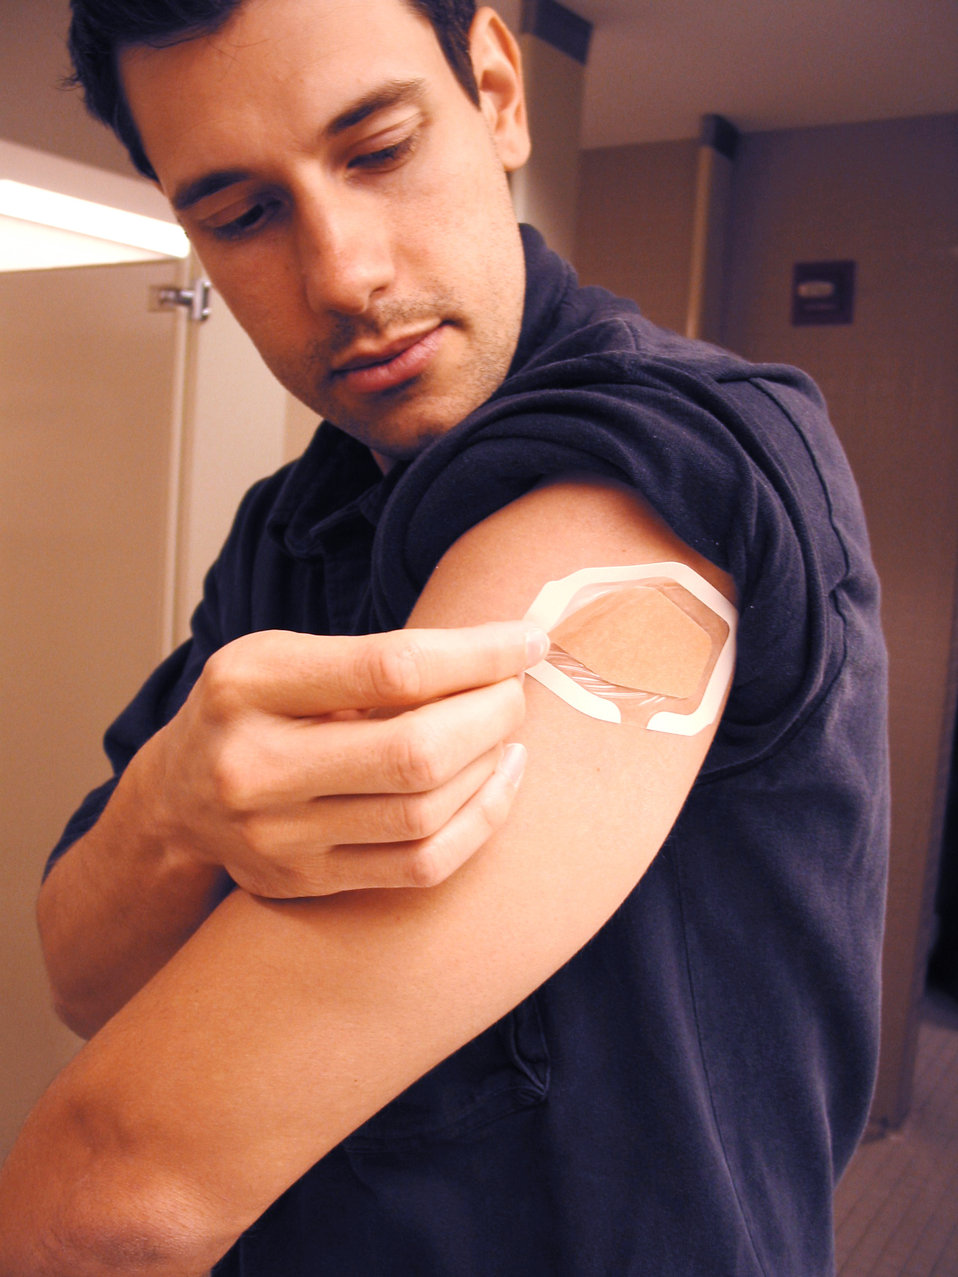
This demonstrates how a smallpox vaccinee covers a vaccination site with a gauze bandage and medical tape after taking a shower.